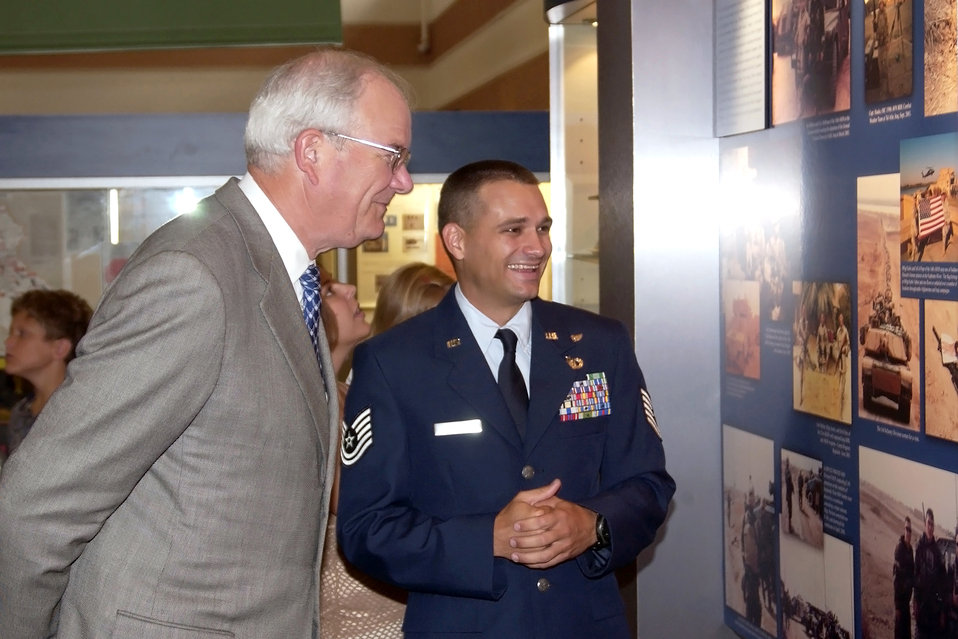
Silver Star awarded

Tech. Sgt. Travis Crosby explains the photos on display in Heritage Hall of the 18th Air Support Operations Group headquarters at Pope Air Force Base, N.C., to Air Force Secretary Michael Wynne on Monday, June 26. Secretary Wynne later presented Sergeant Crosby with the Silver Star during a ceremony for heroic actions while deployed in support of Operation Iraqi Freedom in 2003. Sergeant Crosby is a member of a tactical air control party with the 15th Air Support Operations Squadron.